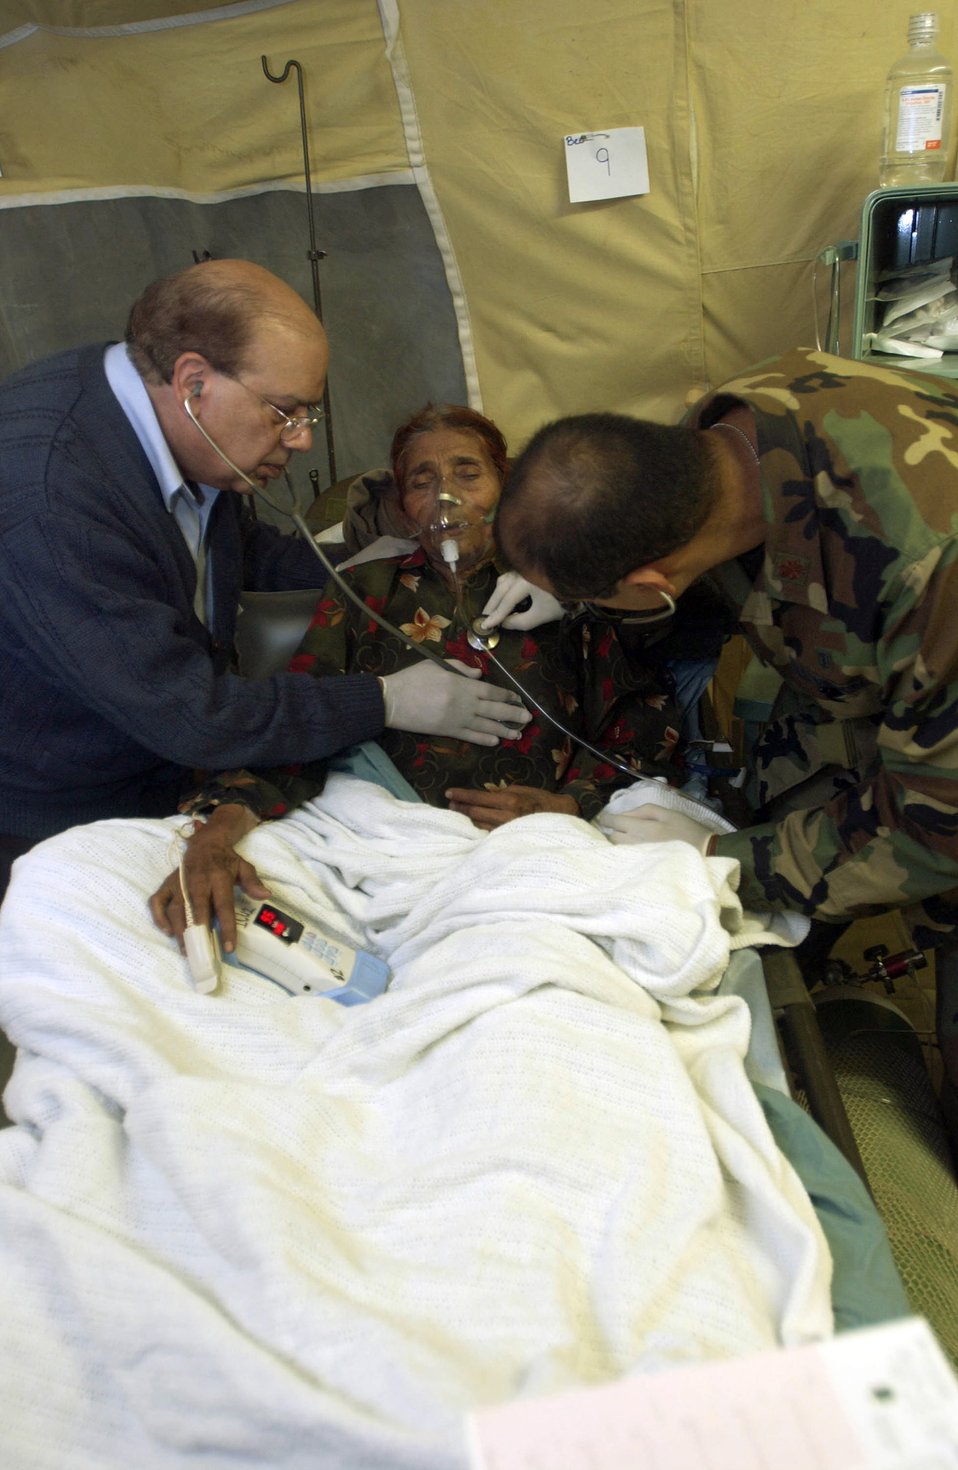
Pakistan Relief

MUZAFFARABAD, Pakistan (AFPN) -- Maj. (Dr.) Fareed Sheikh (right) and his father Dr. Mushtaq Sheikh, a civilian physician, treat a patient at the 212th Mobile Army Surgical Hospital unit here. Both doctors are Pakistani-Americans. The hospital is helping with earthquake relief operations.